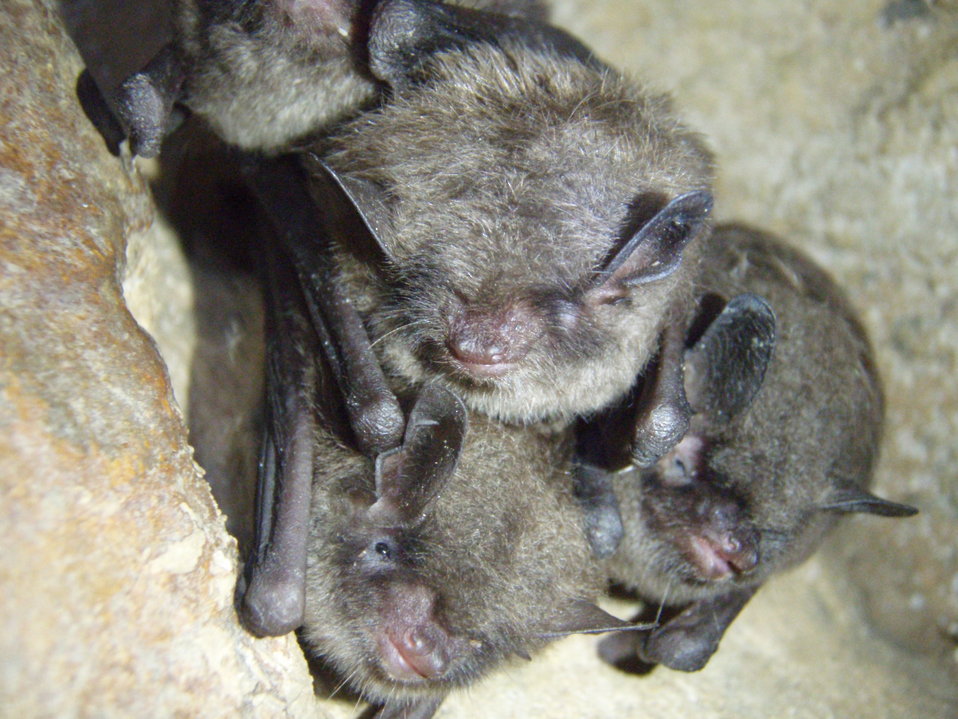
Indiana bats

healthy Indiana bats (Myotis sodalis)